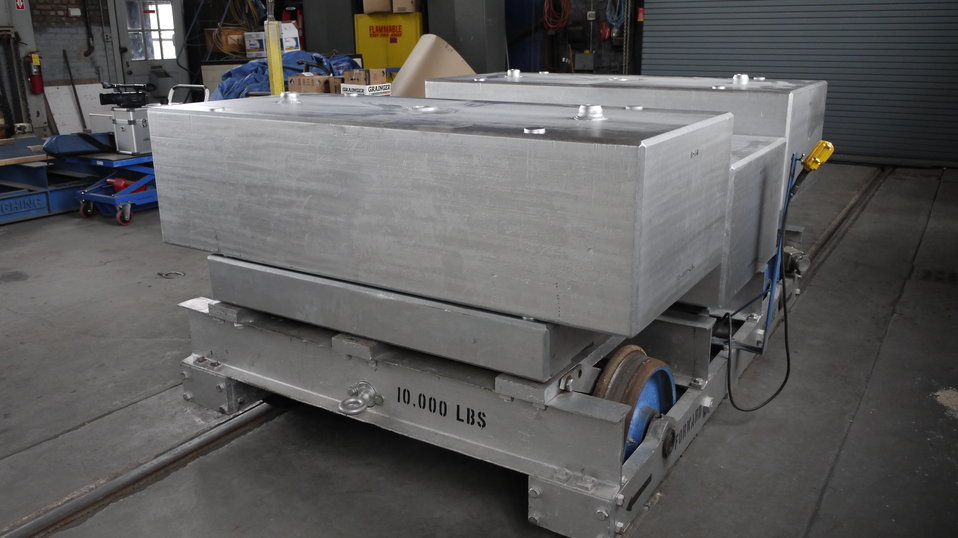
This is the 10,000 lb. test weight cart with some 10,000 lb. test weight standards loaded on the cart after the weights had been calibrated at the U.S. Department of Agriculture’s (USDA) Grain Inspection, Packers, and Stockyard Administration (GIPSA) Master Scale Depot in Chicago, IL on Jul. 2, 2013. USDA GIPSA entered into an agreement with the National Institute of Standards and Technology (NIST) and the Association of American Railroads (AAR) in 1980 transferring responsibility to USDA’s GIPSA to maintain the Master Scale facility in Chicago, IL and calibrate all the master scales in the continental U.S. annually.